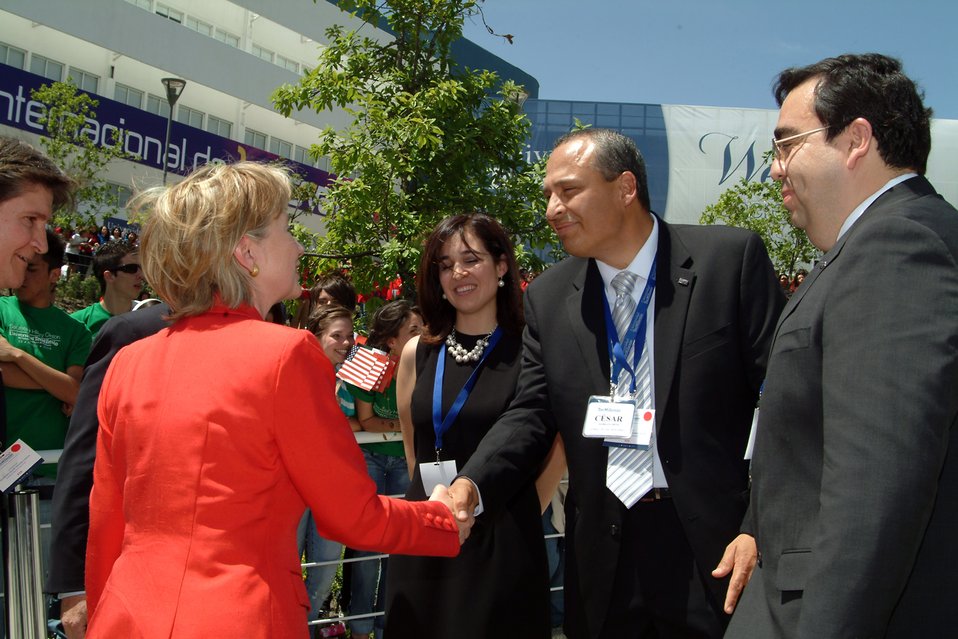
Secretary Clinton at TecMilenio University

U.S. Secretary of State Hillary Rodham Clinton is greeted at TecMilenio University campus by Esperanza Garza, Director of TecMilenio Campus Las Torres, Cesar Barraza, Vice President and Vicerrector of TecMilenio Monterrey Campuses, Alejandro Cristerna, President Rector of TecMilenio System in Monterrey, Mexico March 26, 2009.